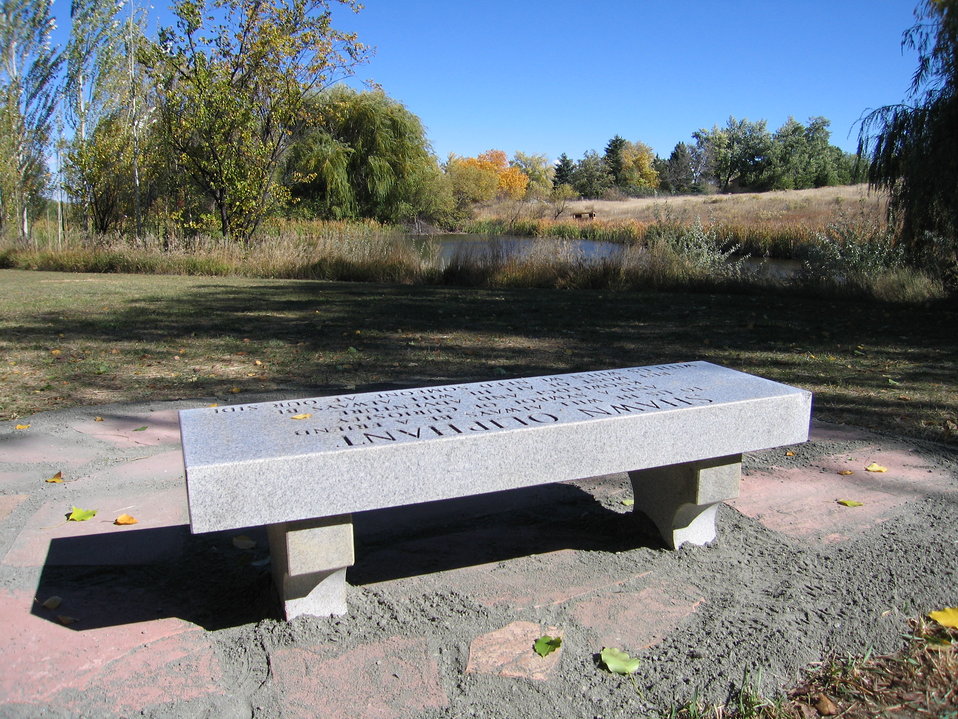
Shawn's Grove